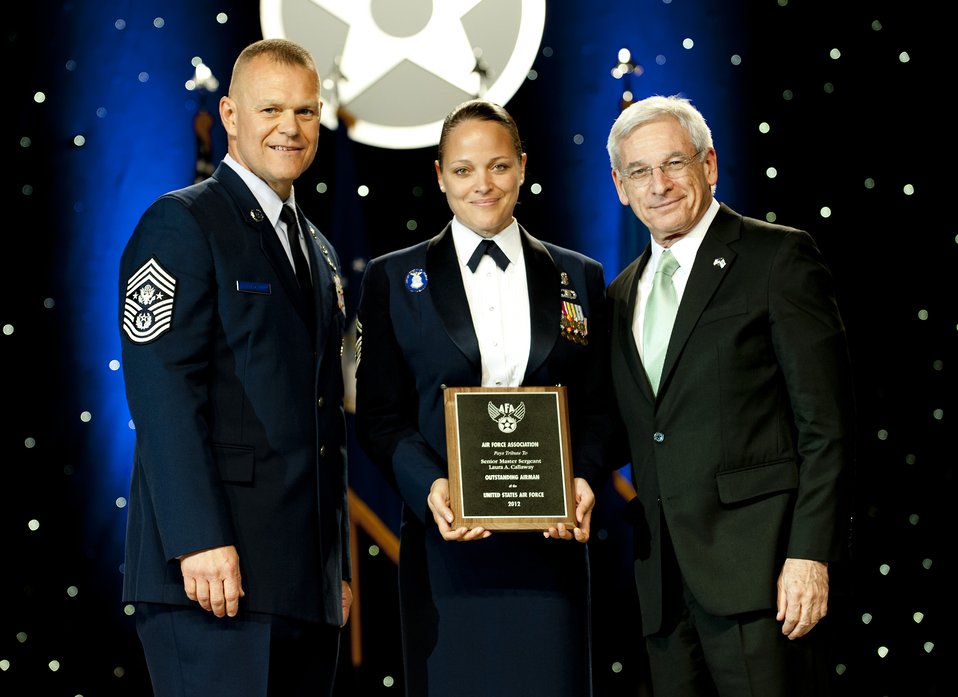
12 Outstanding Airmen of the Year

Chief Master Sgt. of the Air Force James Roy, left, and Sandy Schlitt, right, Air Force Association's chairman of the board, present a plaque to Senior Master Sgt. Laura Callaway during the 12 Outstanding Airmen of the Year reception and awards dinner in Washington, D.C., Sept. 17, 2012. The recipients were recognized for superior leadership, job performance, community involvement and personal achievements. Callaway is with the 60th Medical Operations Squadron from Travis Air Force Base, Calif.